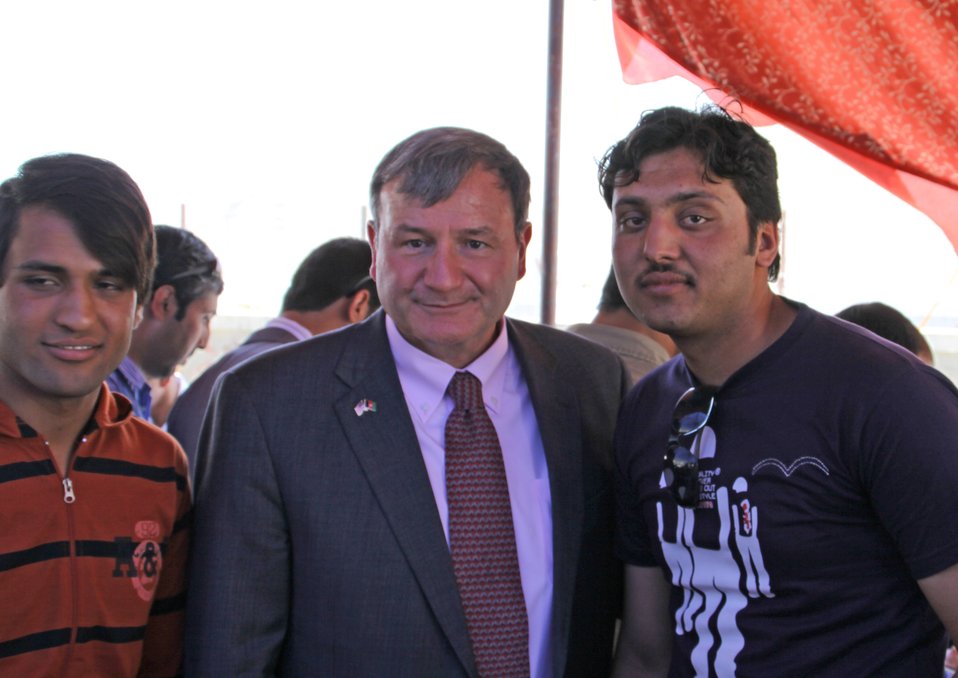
105 MW Tarakhil Power Plant Handover